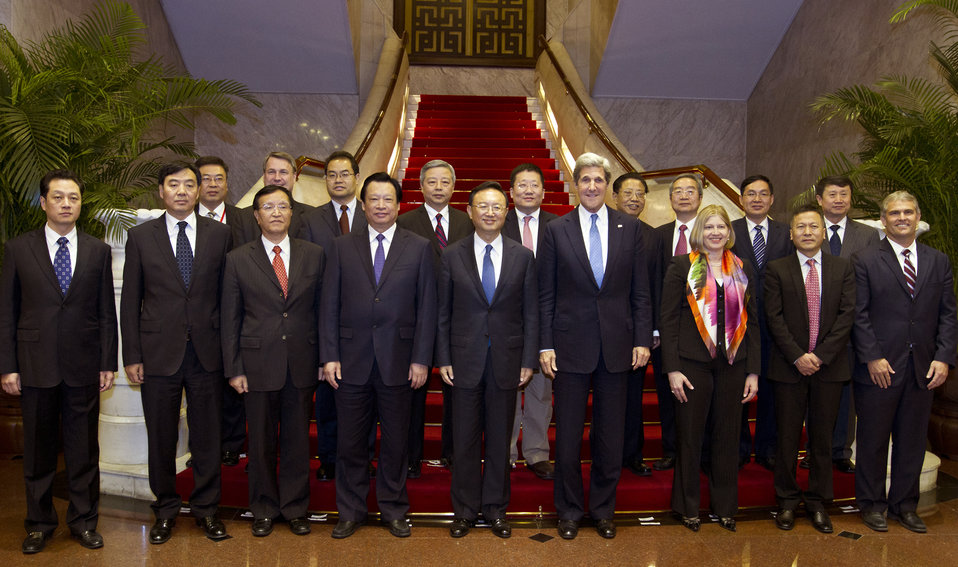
Secretary Kerry and Chinese State Councilor Yang Jiechi Pose for a Group Photo

U.S. Secretary of State John Kerry and and Chinese State Councilor Yang Jiechi pose for a group photo at the U.S.-China Energy Cooperation Meeting in Beijing, China, on April 13, 2013.